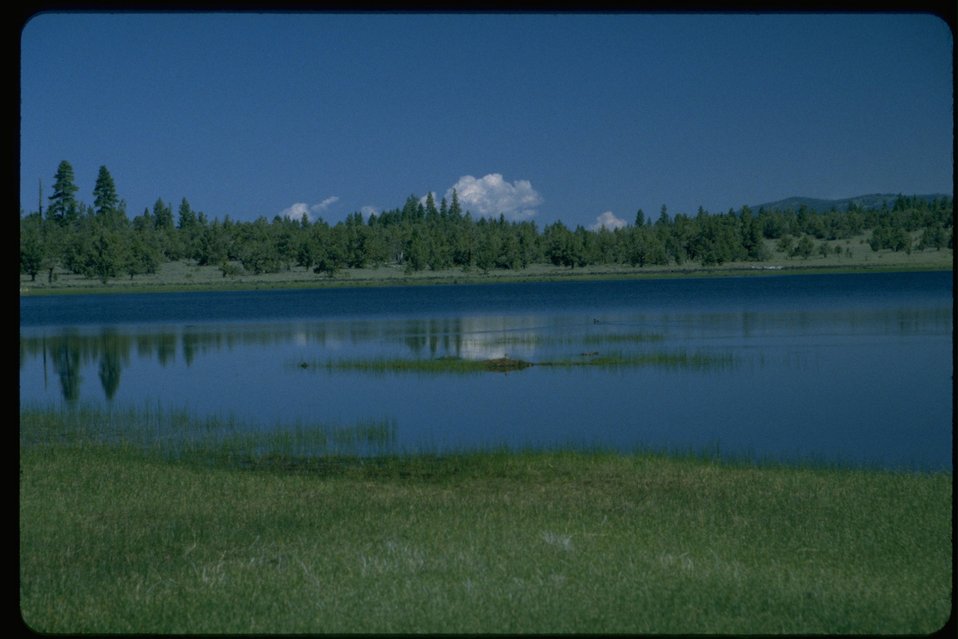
Upper Midway Reservoir along Hourse Camp Road.